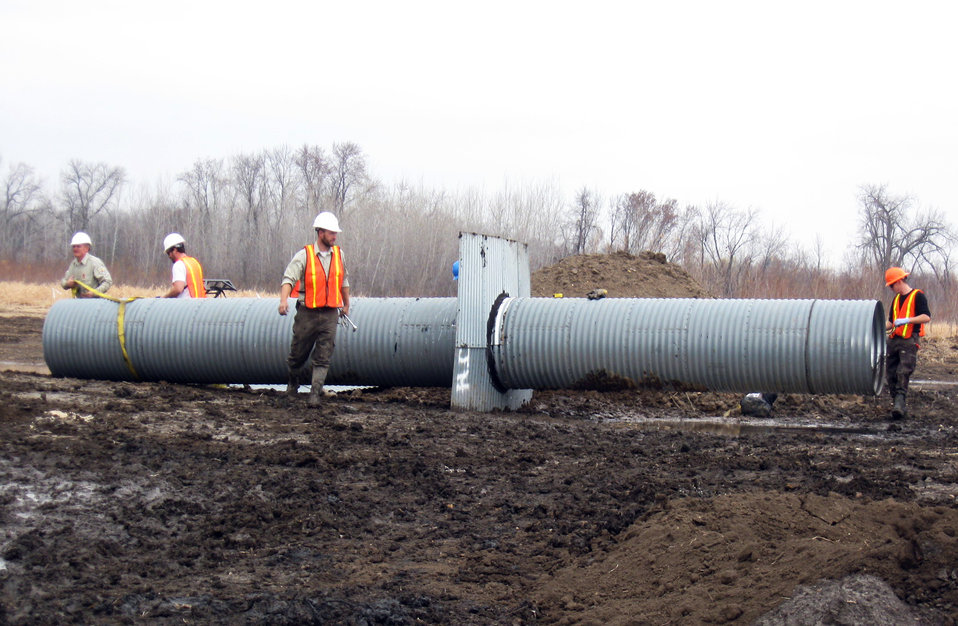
Preparing the 36-inch Pipe for Restoration

In the middle of the pipe is an anti-seep collar that forces water to travel around it. This slows water down so it does not move fast enough to weaken the earthen dike.